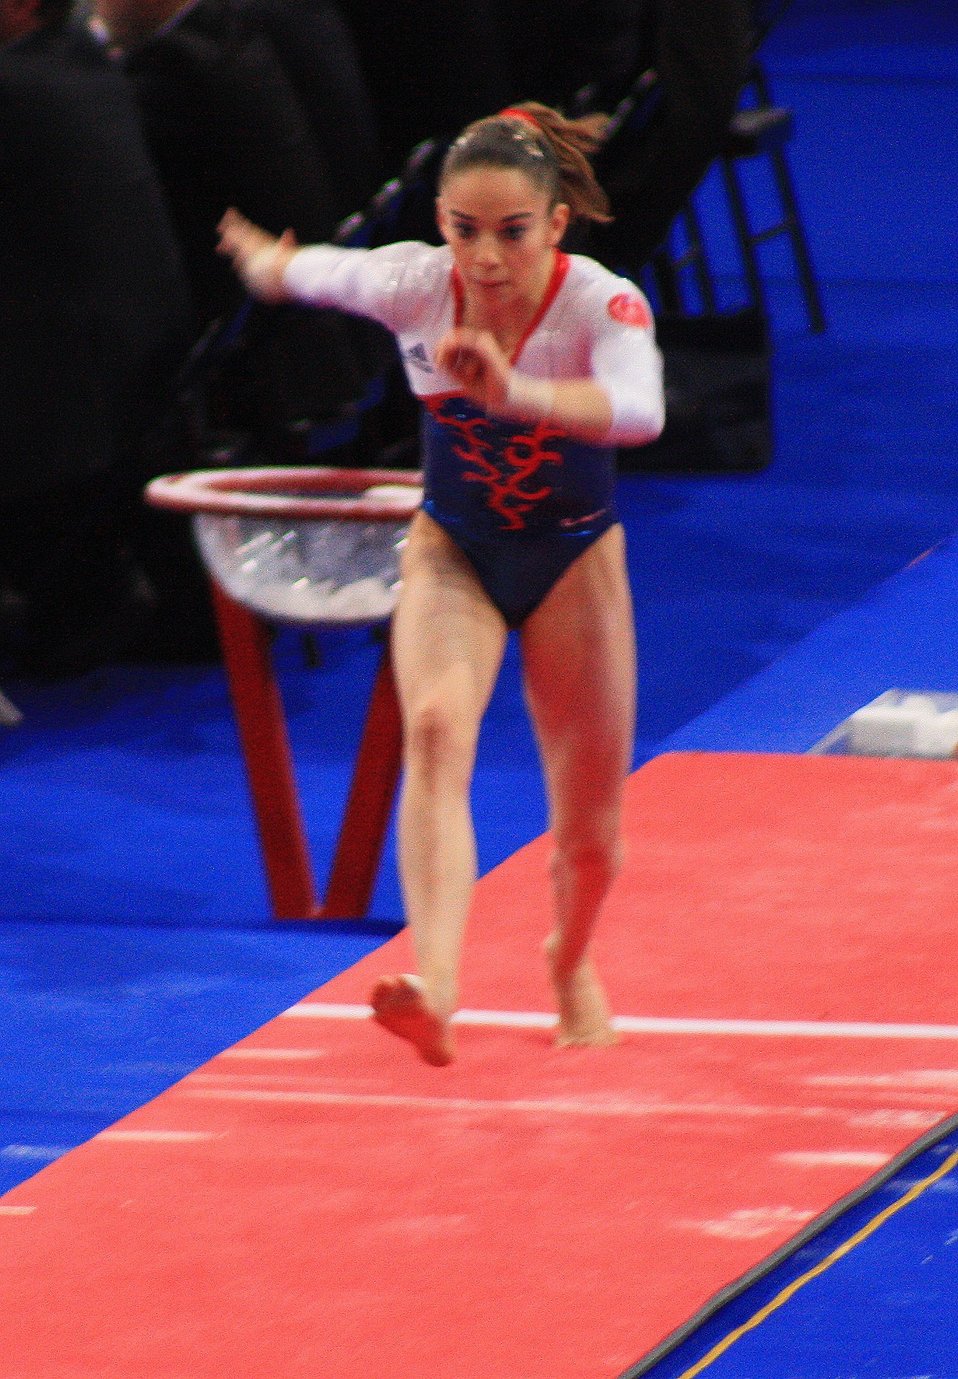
Fran√ßais†: Youna Dufournet prend son √©lan en qualifications du saut de cheval, aux 17e Internationaux de France (2010).